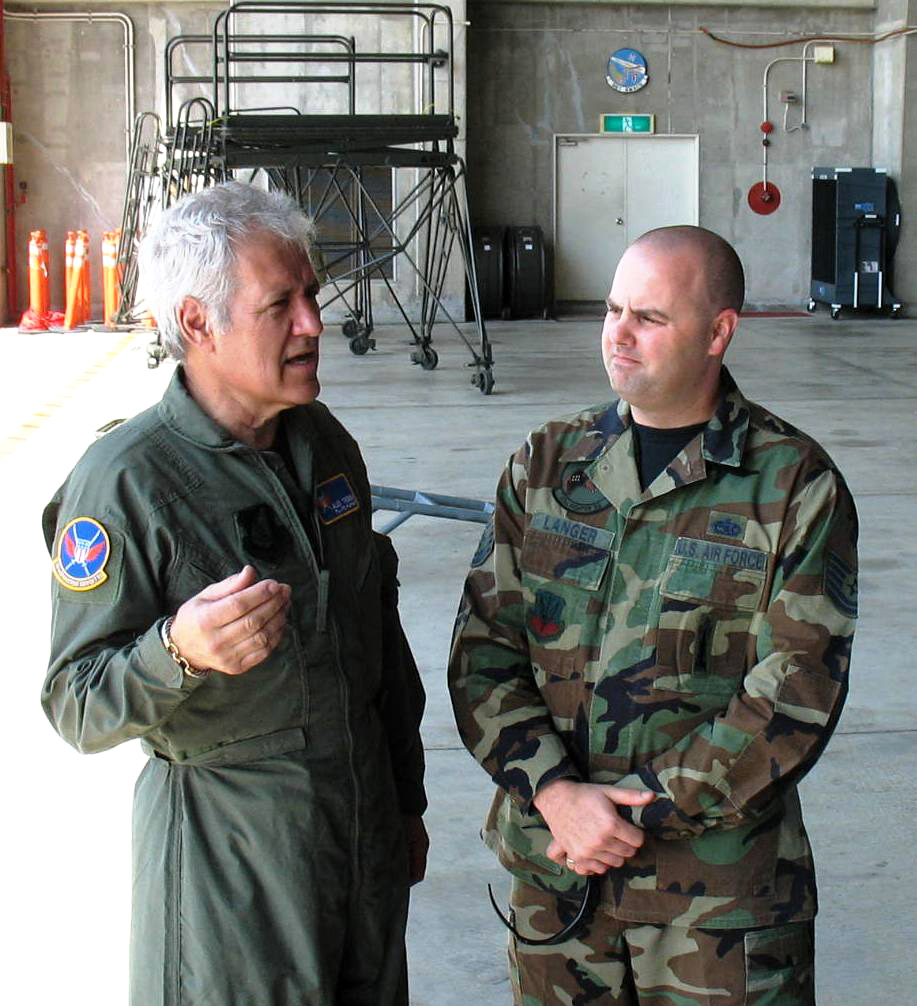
'Jeopardy' host visits Kadena Airmen

Alex Trebek talks with Tech. Sgt. Mark Langer during a